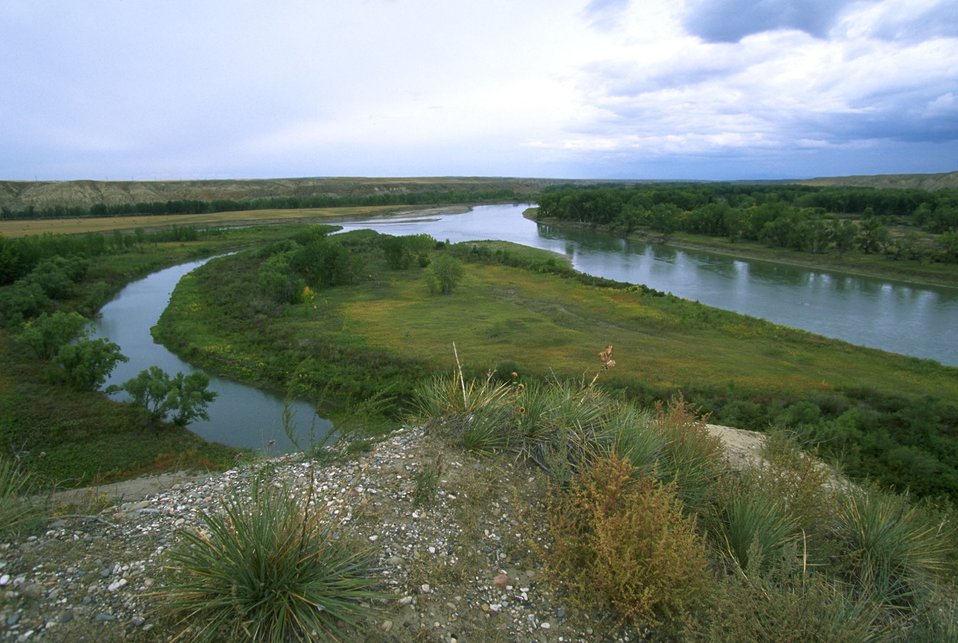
Decision Point at the confluence of the Marias and Missouri Rivers